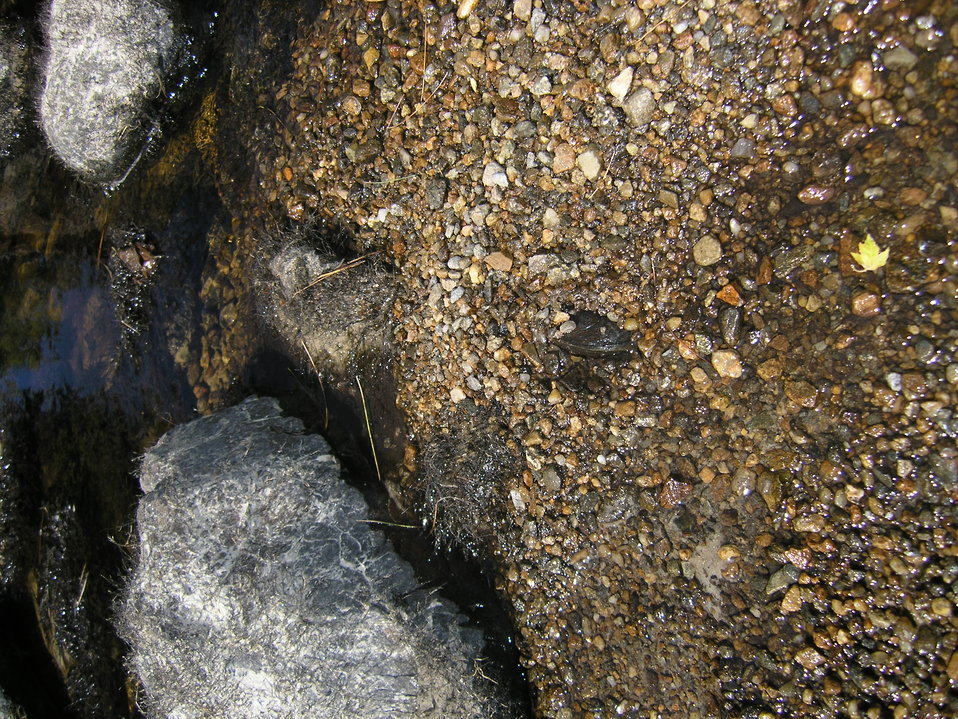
Stranded Mussel

Mussel stranded in a river in Suncook, NH.